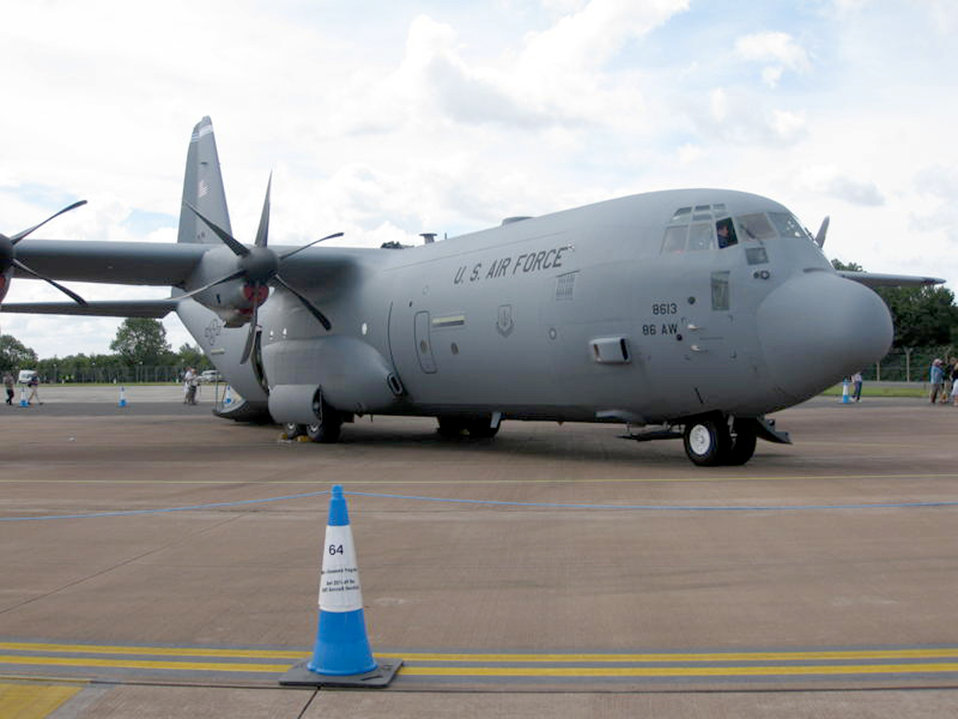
'Royal International Air Tattoo'

A C-130J Super Hercules sits on the ramp at the start of the Royal International Air July 17, 2010, at Royal Air Force Fairford, England. The tattoo is held annually as